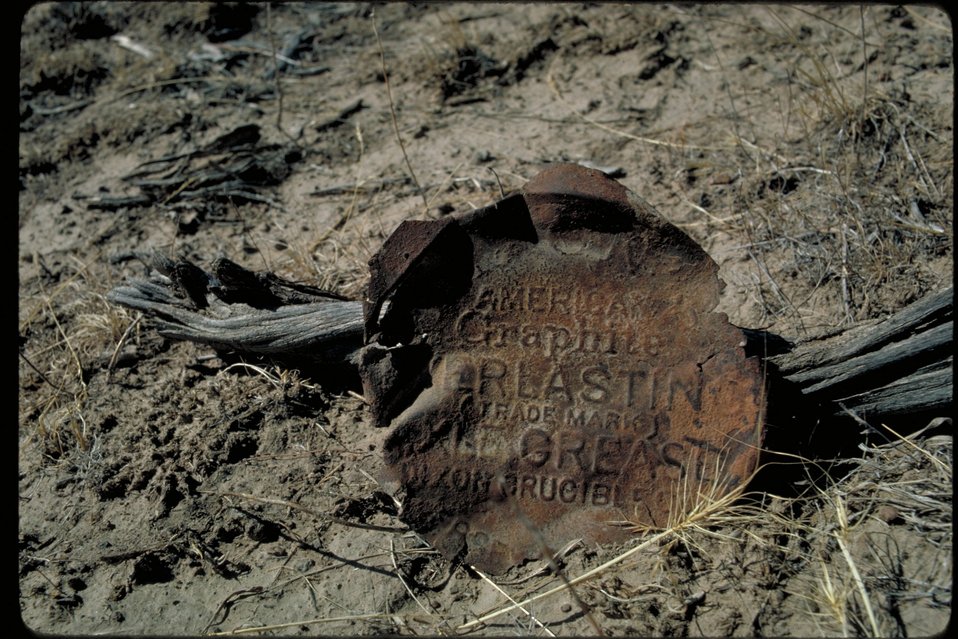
Oregon Trail east of Canyon Creek Lower Snake River District